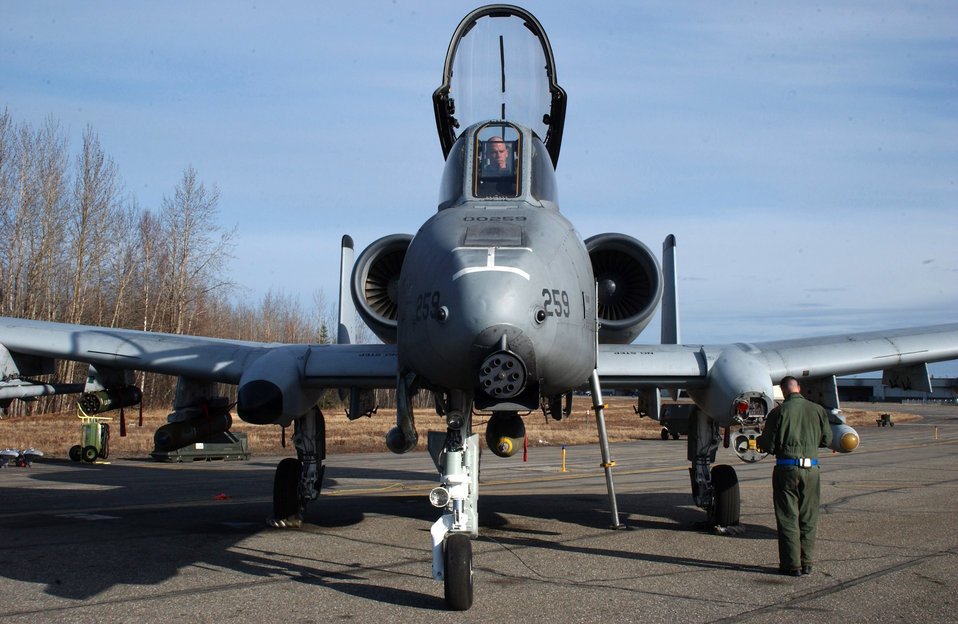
Alaska A-10s are goin' to Georgia

1st Lt. Dale Stark conducts a pre-flight inspection on an A-10 Thunderbolt II April 24 at Eielson Air Force Base, Alaska. Due to the Base Realignment and Closure list the A-10 Thunderbolt II is being relocated to Moody AFB, Ga. Lieutenant Stark is assigned to the 355th Fighter Squadron.